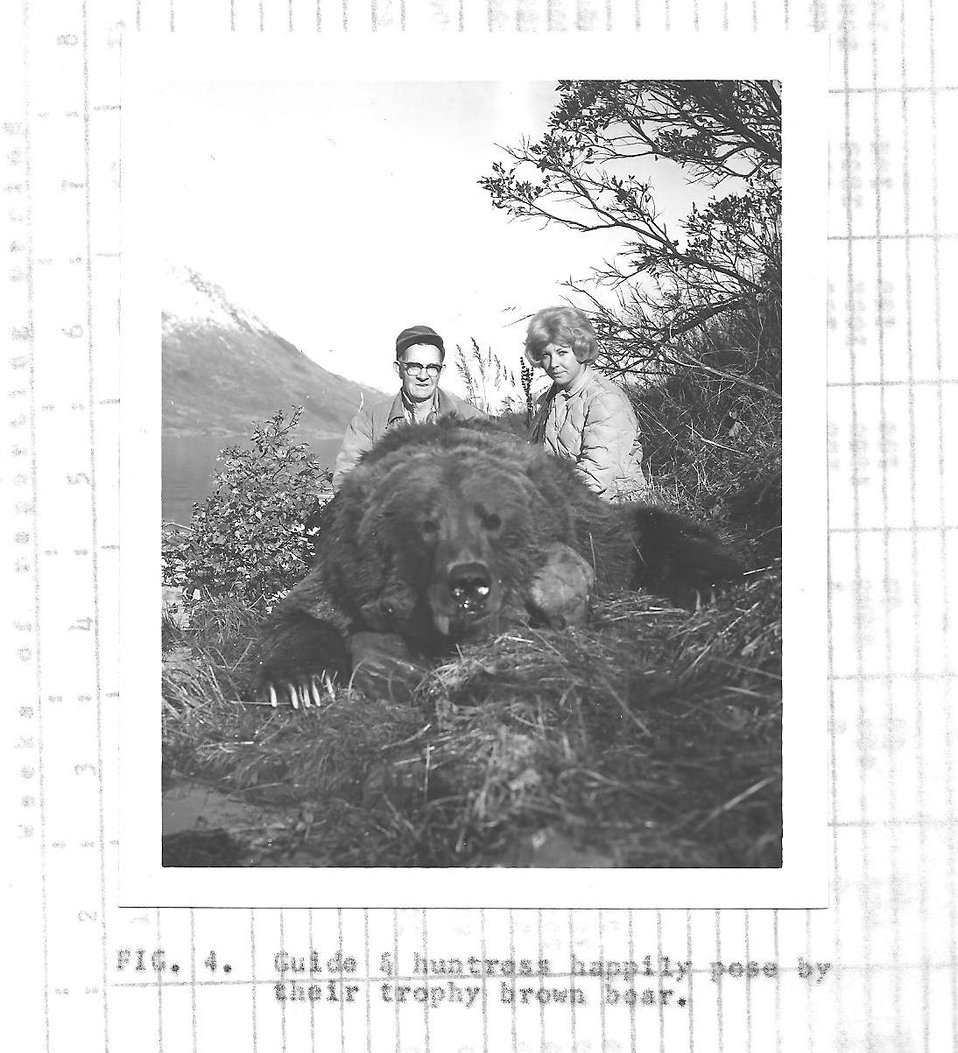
(1963) Guide and Huntress

Credit: USFWS

Source and Contact: Kodiak National Wildlife Refuge